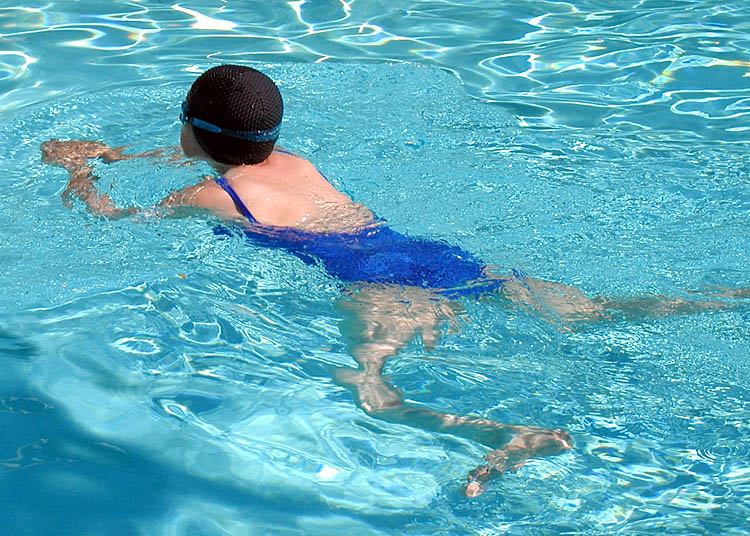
A breaststroke swimmer, in a hotel swimming pool at Brixham, Devon, England.
Taken by Adrian Pingstone in July 2003 and released to the public domain.